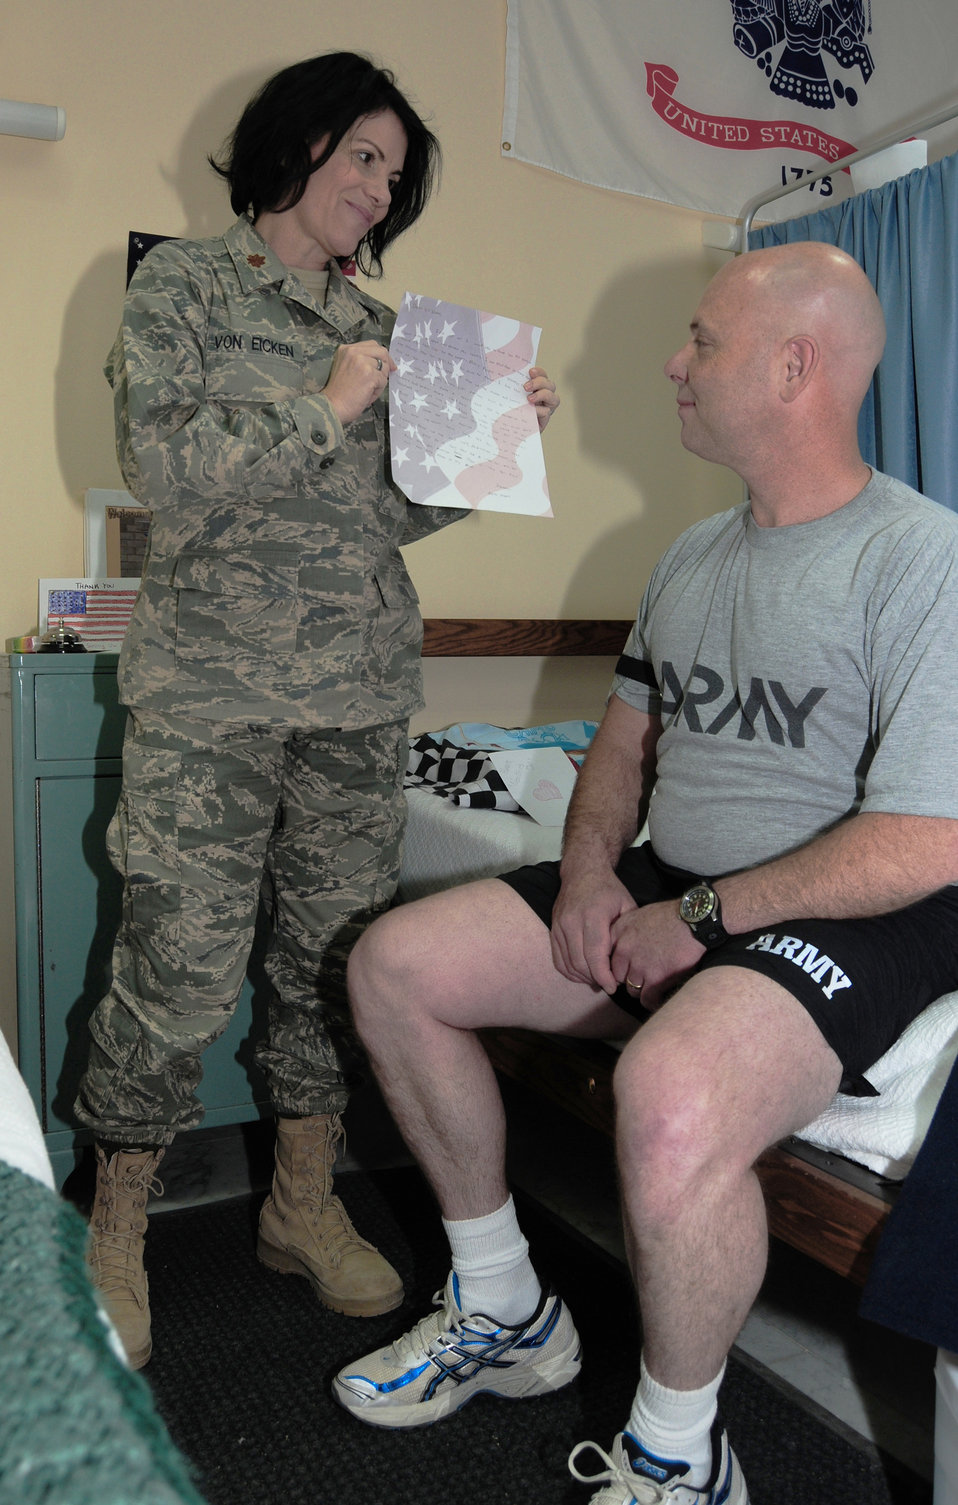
Airmen salute nurses, medical technicans

Maj. Susan von Eicken talks to a patient escort about the letters of support provided to each transient patient Feb. 15, 2010, at an air base in Southwest Asia. Major von Eicken is a 386th Expeditionary Medical Group contingency aeromedical staging facility mental health nurse.